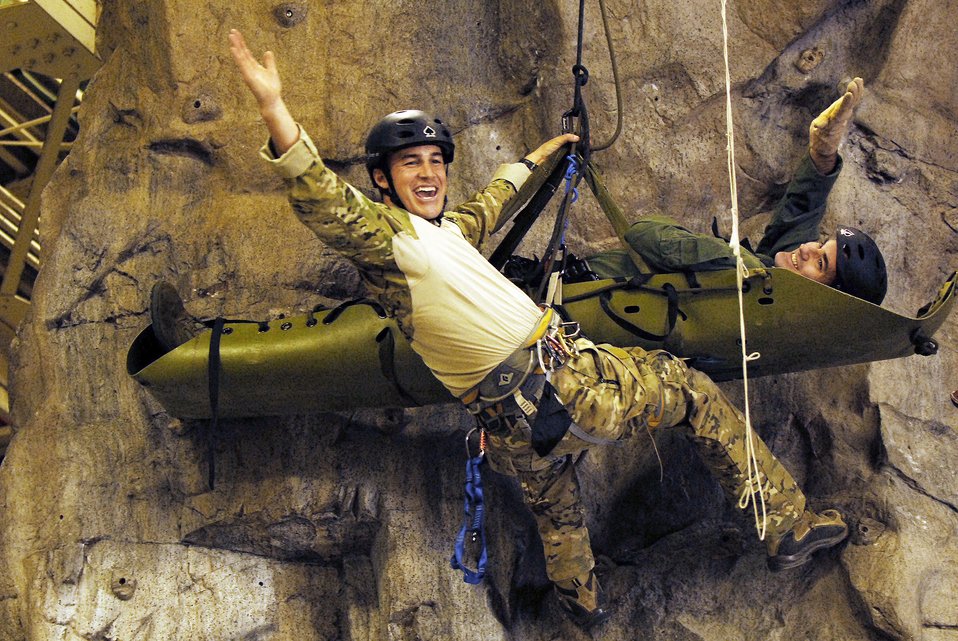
He's coming down!

A pararescuemen and